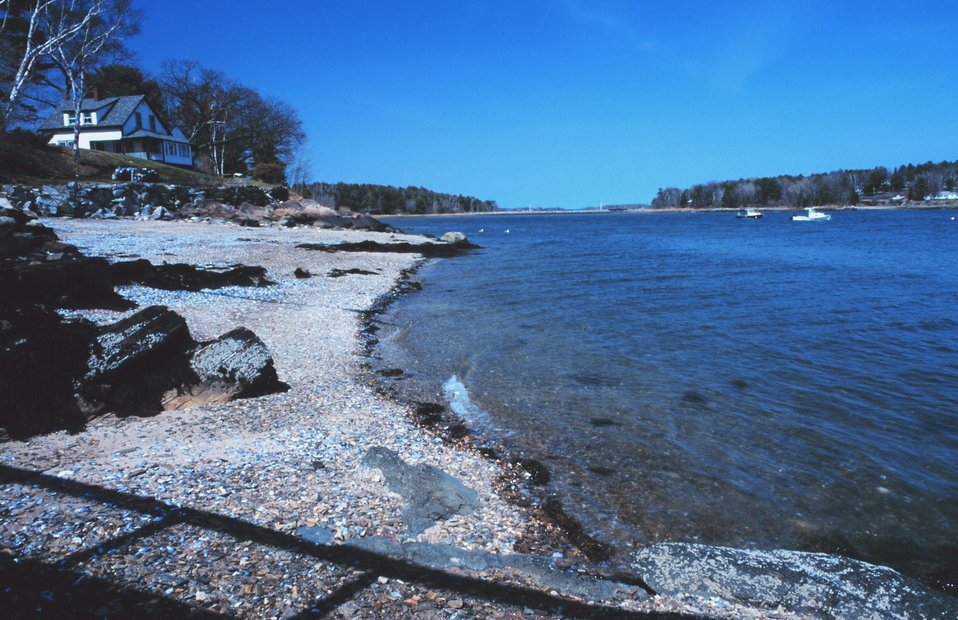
Views along the coast